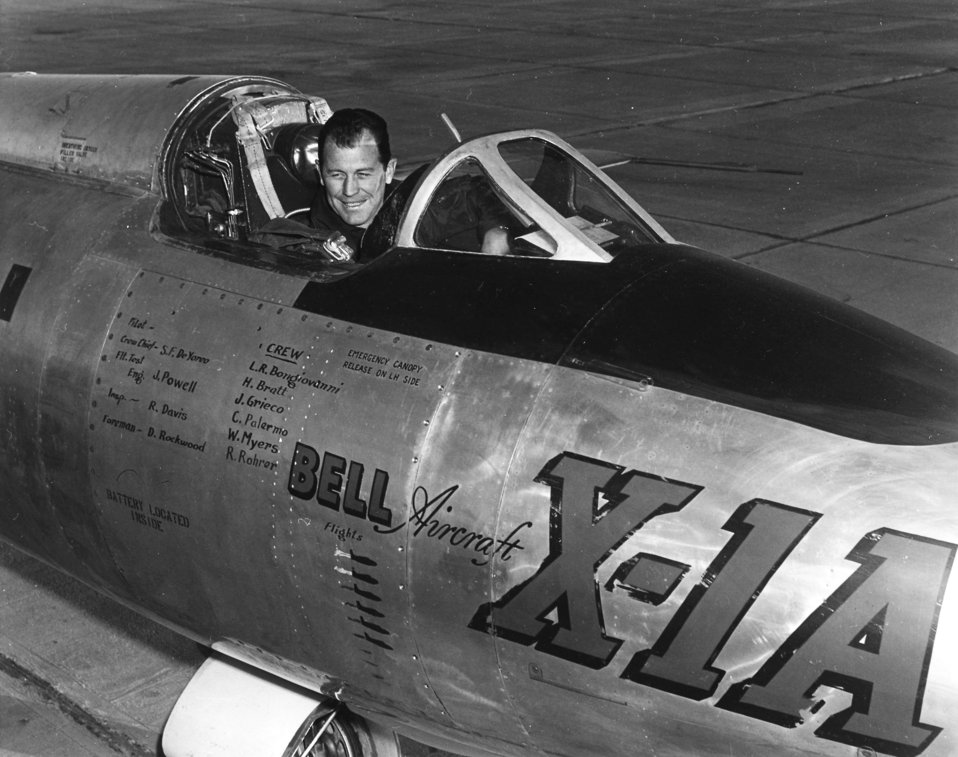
Bell X-1A

Capt. Charles E. Yeager seated in the cockpit of the Bell X-1A supersonic research aircraft. He became the first man to fly faster than the speed of sound on Oct. 14, 1947.